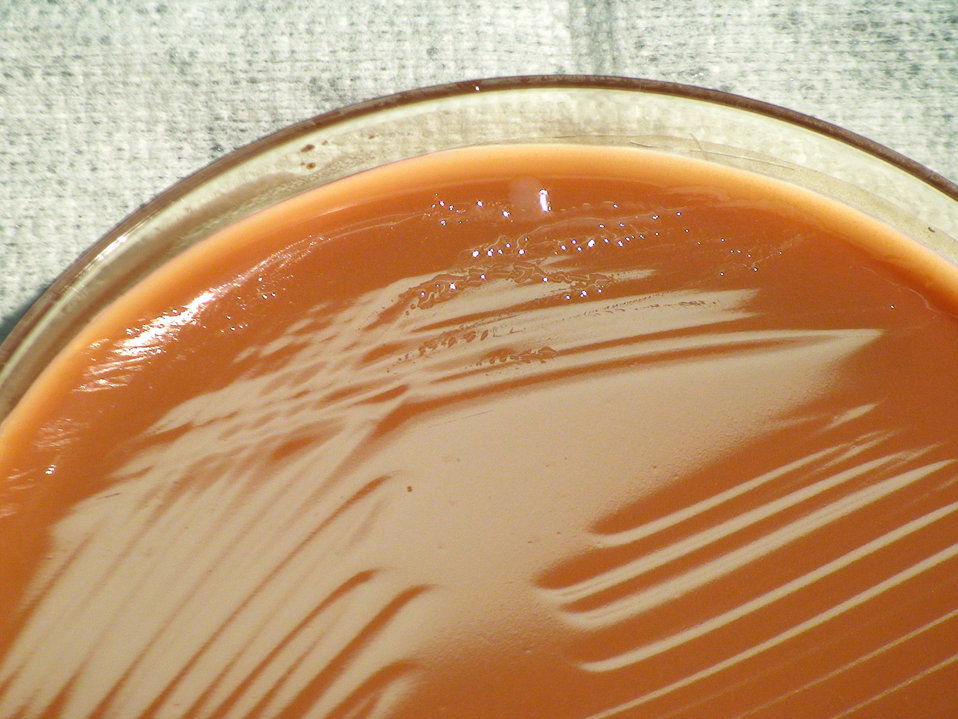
As a closer view of PHIL 12444, this photograph depicts the colonial morphology displayed by Gram-negative Francisella tularensis bacteria, which was grown on a medium of chocolate agar, for a 24 hour time period, at a temperature of 37�C. Take a look at PHIL 12446, which depicts the appearance of F. tularensis colonies grown on the same medium, and at the same temperature, but for twice the time (48hr). Also see PHIL 12447, for the appearance of bacterial colonies, again, grown on the same medium, and at the same temperature, but for three times the time period (72hr). This bacterium is both an animal, and a human pathogen, and is responsible for causing the disease known as tularemia.